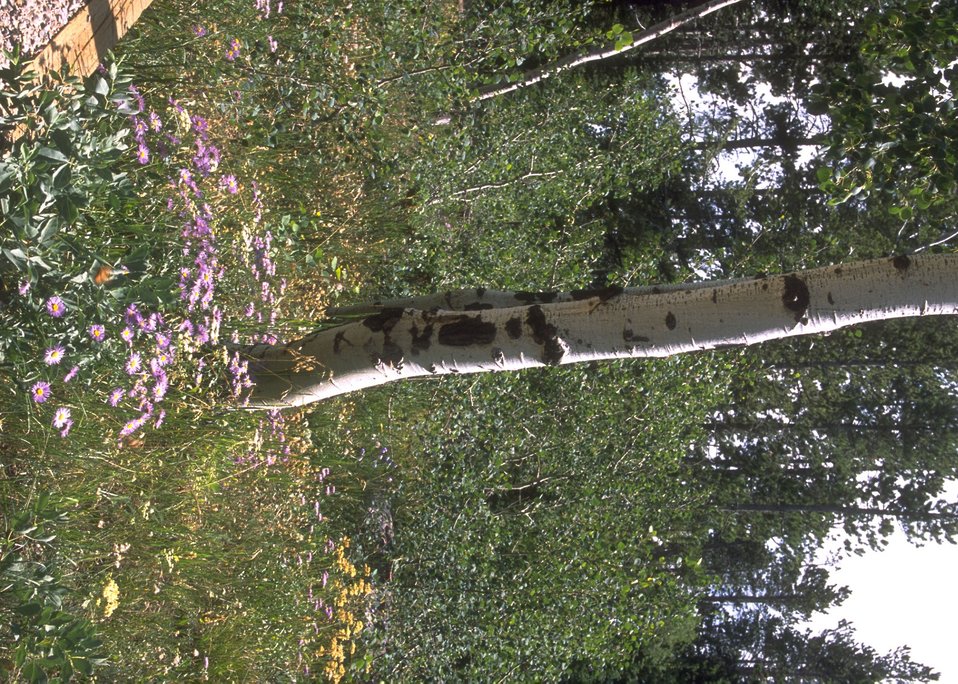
Aspen and flowers, Muddy Mountain Recreation Area, Casper Field Office.